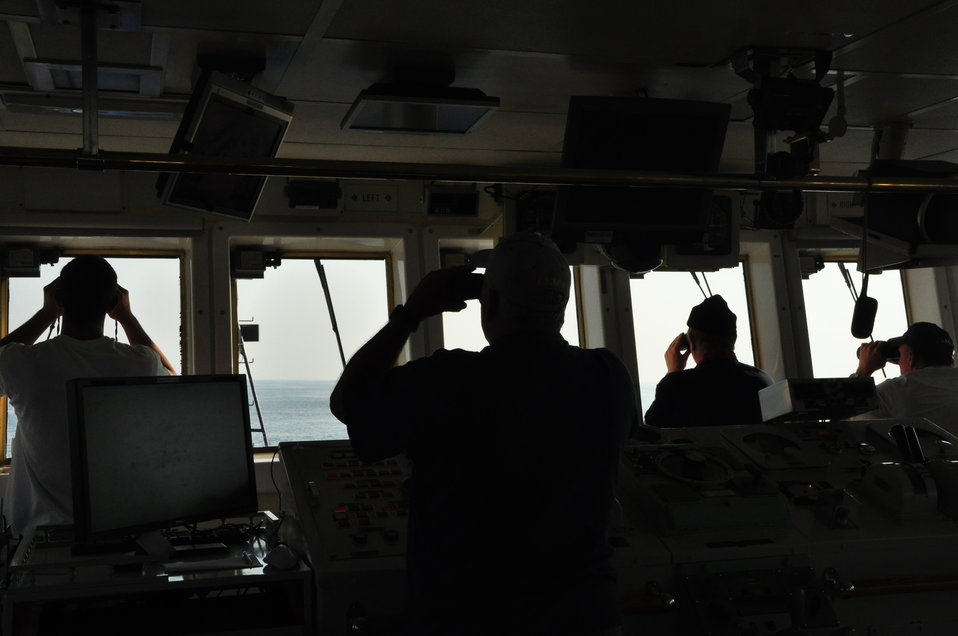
August 2009, All eyes on the horizon

Not a set of binoculars were left as all of us watched the horizon intently for the telltale spout of a whale. We did see a few minkes, and a pod of dolphins but all were pretty far away, happily going about their mirgatory route. They didn't stick around for us to gaze at them, maybe next time!